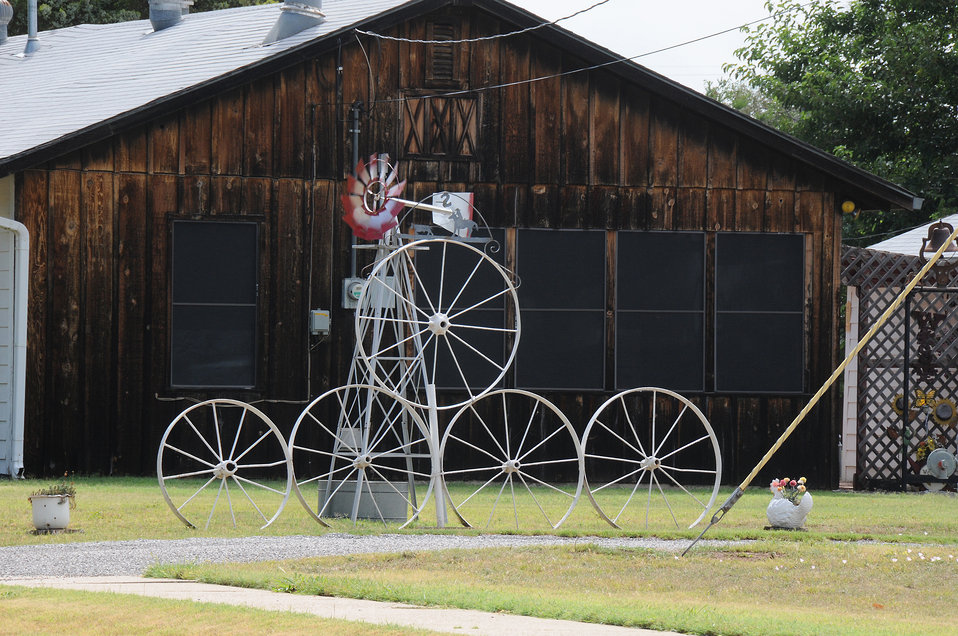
Local artisans create art from wagon wheels and wind-power in Medicine Park, Oklahoma on August 13, 2009.